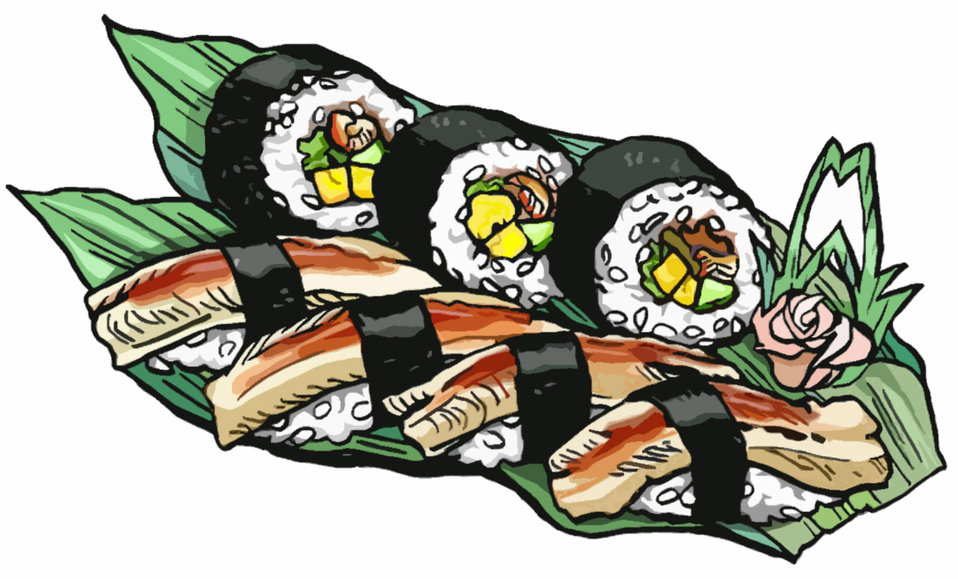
Sushi (sushi roll,conger eel).